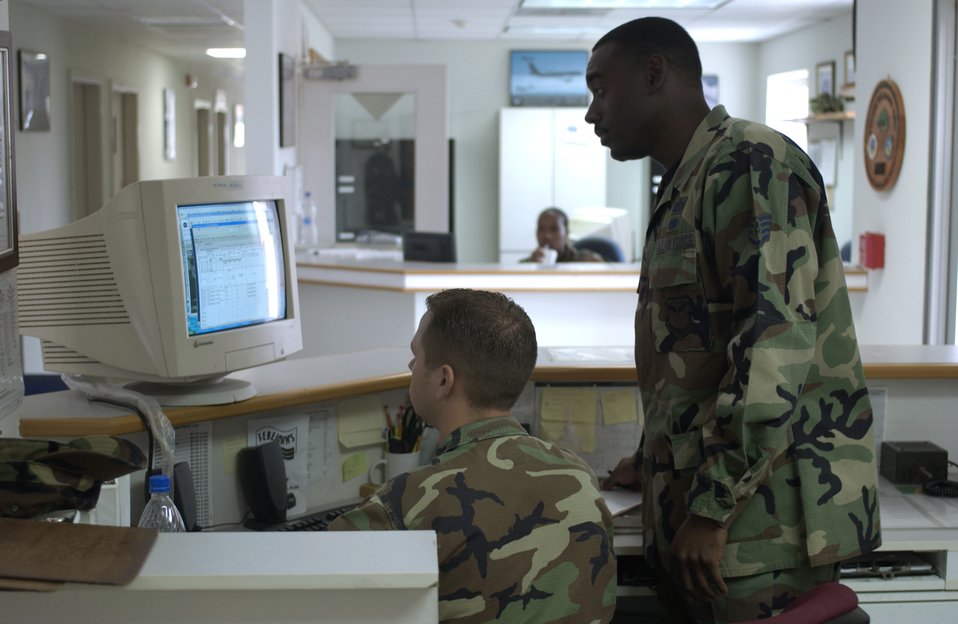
Airmen keep Soto Cano's runway running

SOTO CANO AIR BASE, Honduras -- Staff Sgts. Joshua Smith (left) and James Brown check the five-day forecast for here and Central America. The Airmen are weather forecasters with Joint Task Force-Bravo and are some of the Airmen responsible for keeping the base runway open for counterdrug and humanitarian support operations.